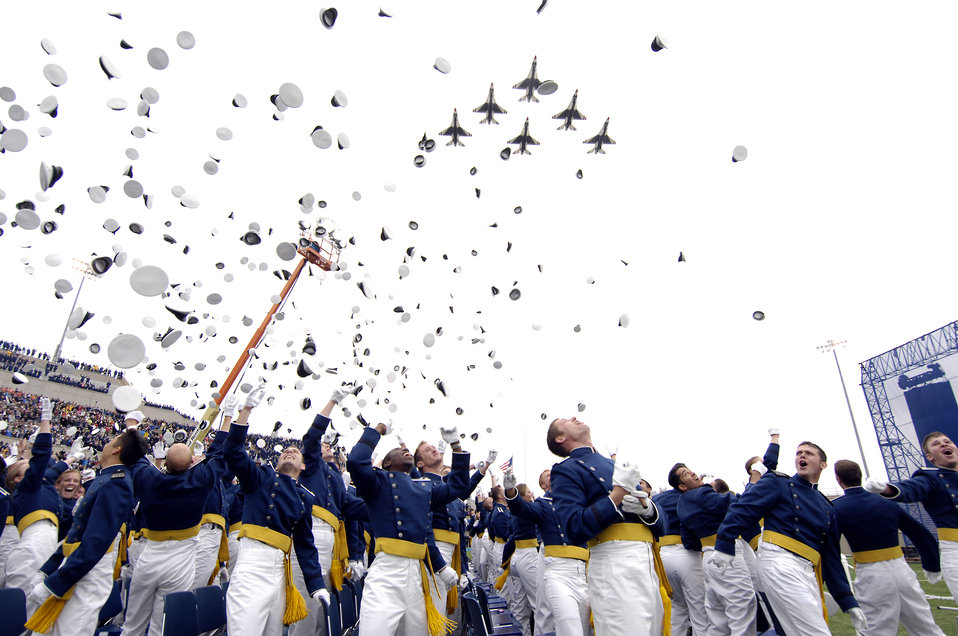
Academy Class of 2008 graduates

The Air Force Thunderbirds fly over the U.S. Air Force Academy's Falcon Stadium as 1012 newly graduated second lieutenants, members of the Class of 2008, toss their hats in the air at the conclusion of graduation ceremonies. President George W. Bush was the commencement speaker.